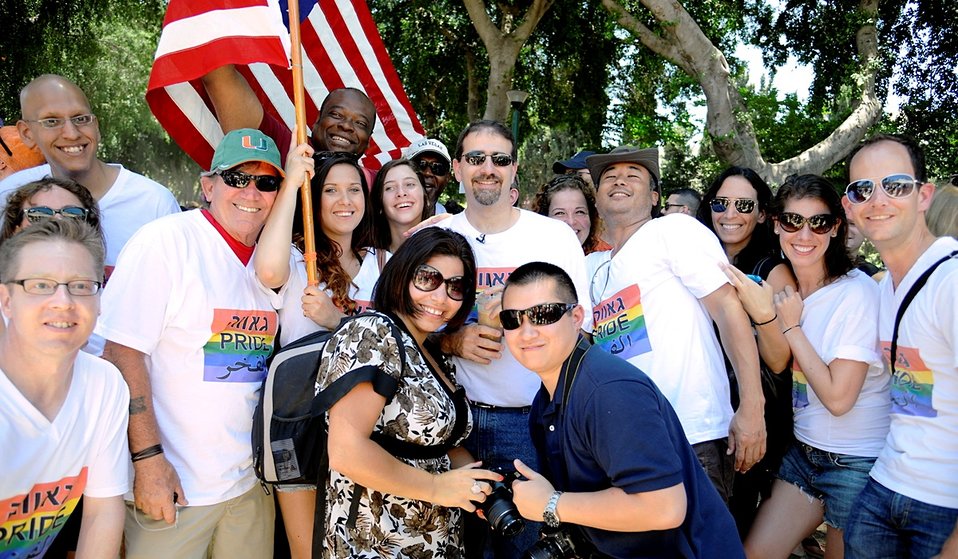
Ambassador Shapiro Participates in the Gay Pride Parade

U.S. Ambassador to Israel Dan Shapiro participates in the Gay Pride Parade in Tel Aviv, Israel, on June 8, 2012.